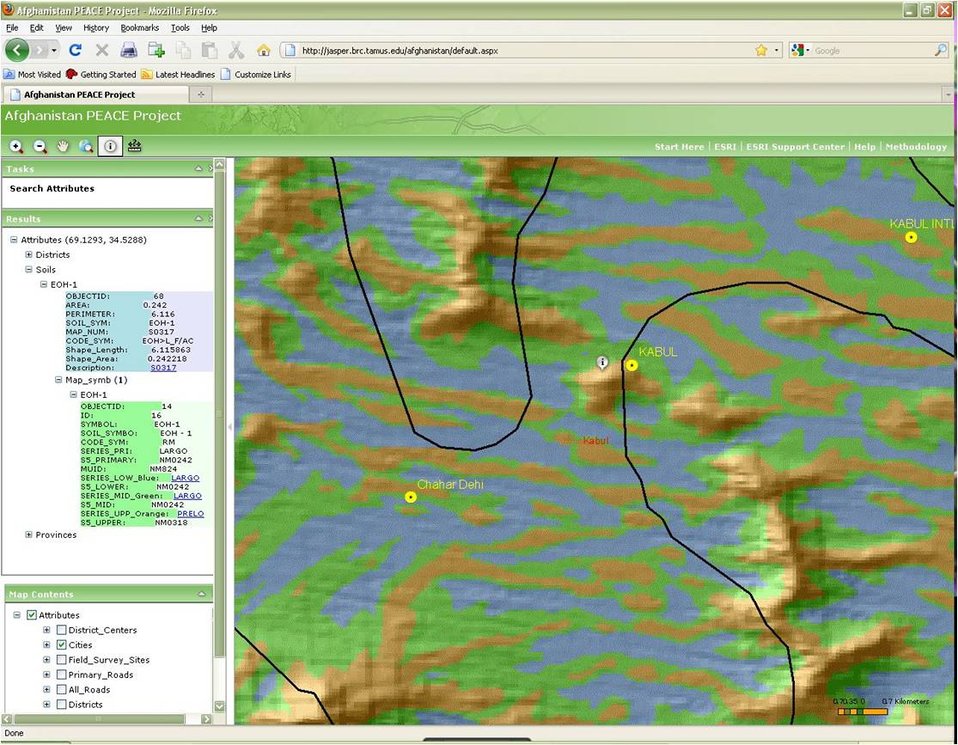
Interactive Soils Website Aids Development

The Government of the Islamic Republic of Afghanistan and the country’s private sector have been struggling for decades to improve the livelihoods of the Afghan people. The lack of quality information on soils and other agriculture indicators has been a major constraint on development.
In September 2009, USAID’s PEACE project, implemented by Texas A&M University and the University of California, Davis, launched a new web-based tool that provides accurate small-scale soil information for planning and implementing development activities. The tool is available at jasper.brc.tamus.edu/afghanistan/default.aspx.
This tool will greatly improve site-selection and design opportunities for construction, community and agricultural development, and mitigation and rehabilitation purposes. The Afghan Government can use the site for training, as well as for educational and research purposes, and the tool will greatly facilitate strategic national planning efforts.
The last soils information for Afghanistan was published in 2005. The data has limited utility because it is not associated with databases, is at a very coarse scale, and most institutions and organizations lack the technical expertise to interpret the soil descriptions. The new web-based soils data is mapped at a 1:1,000,000 scale and includes a digital elevation model overlay. This refinement allows the data to be broken down into finer-scaled soil classifications than those previously published.
For the first time, users can obtain current, site-specific, and detailed soils descriptions and taxonomy for anywhere in Afghanistan from anywhere in the world. The software is very interactive, allowing users to zoom in on a site and download the data with very little effort. The new tool has the potential to increase the efficiency and effectiveness of development efforts in a number of Afghanistan’s economic sectors and improve other USAID investments.